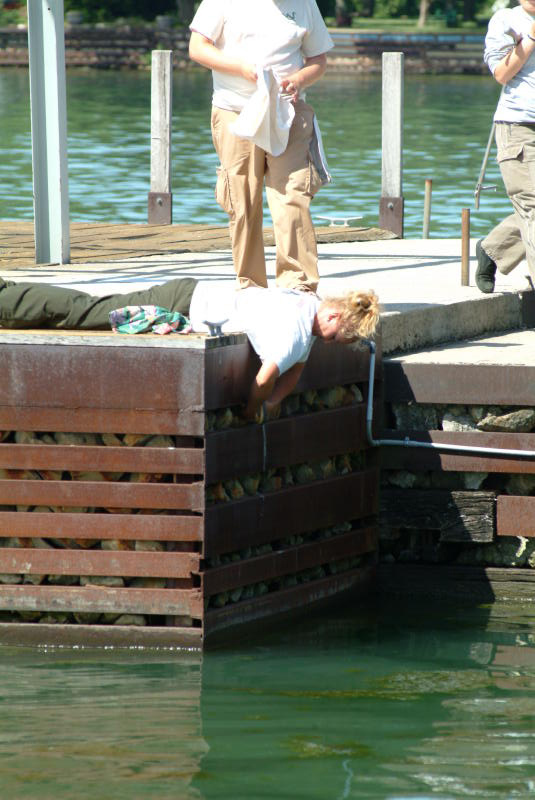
Recovered Lake Erie watersnake (Nerodia sipedon insularum)